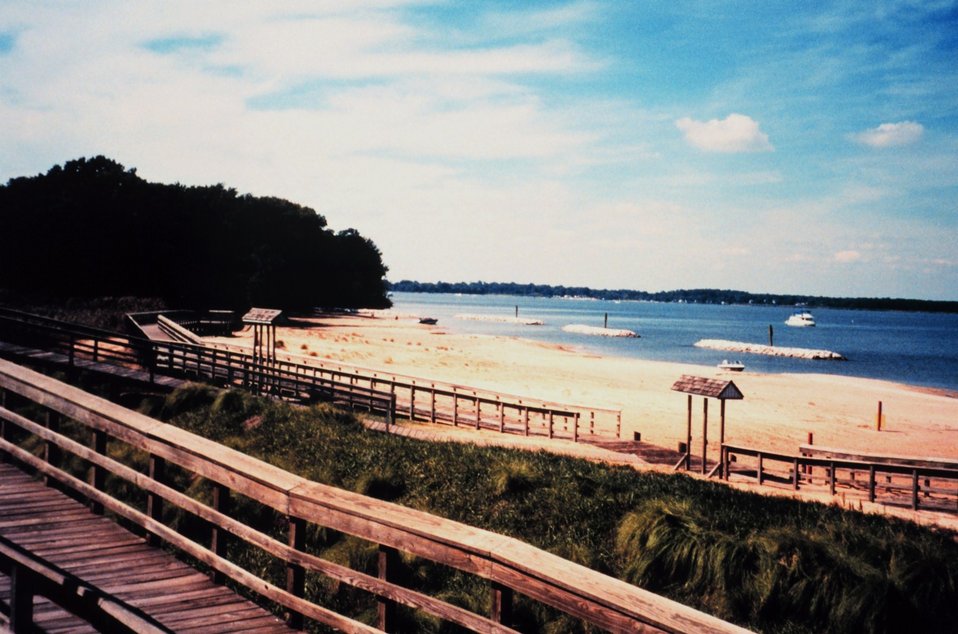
Hart-Miller Island, once two islands that nearly eroded into extinction, are now one. They are being regenerated and enlarged with dredge spoils from Baltimore Harbor. Recreation area on what is left of the original Miller's Island is popular with Baltimore area boaters.